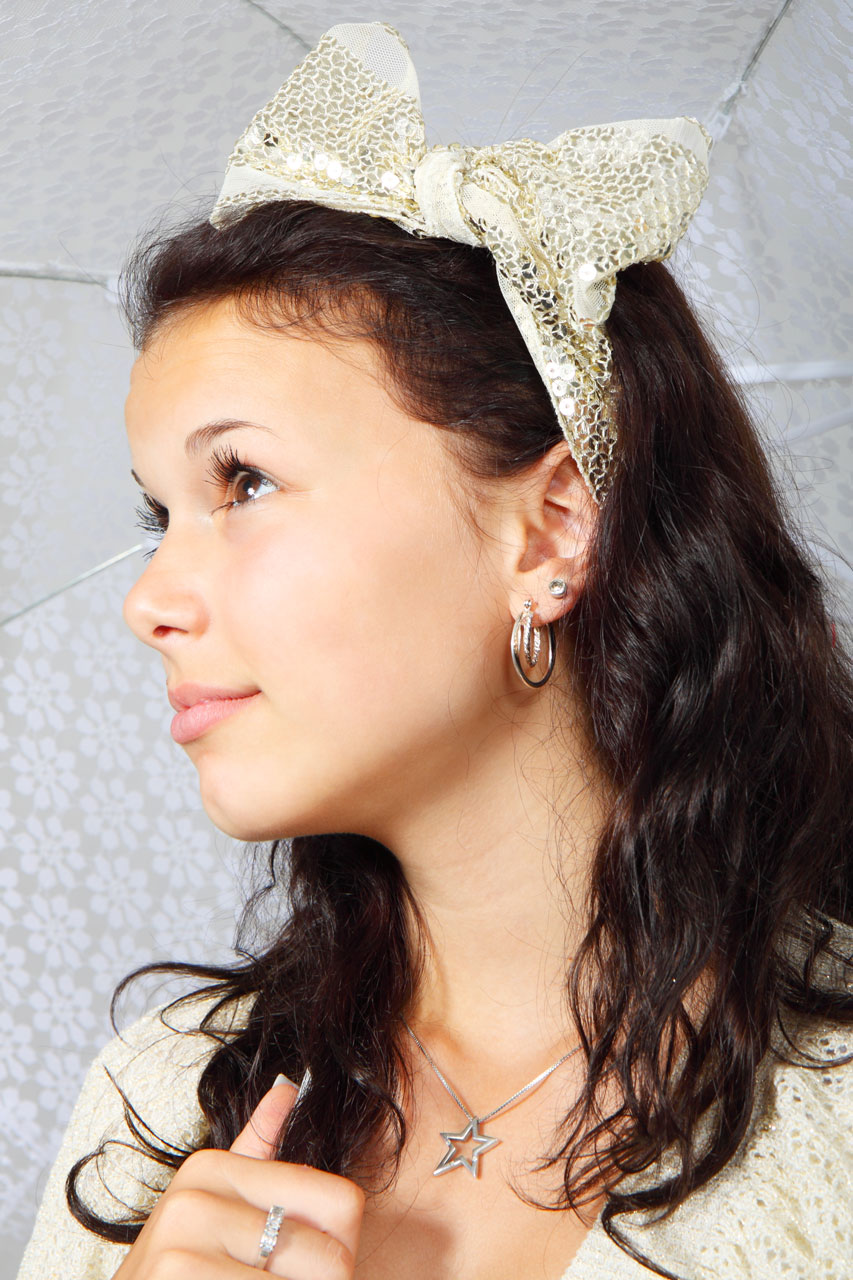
Woman and umbrella

Young woman with umbrella.